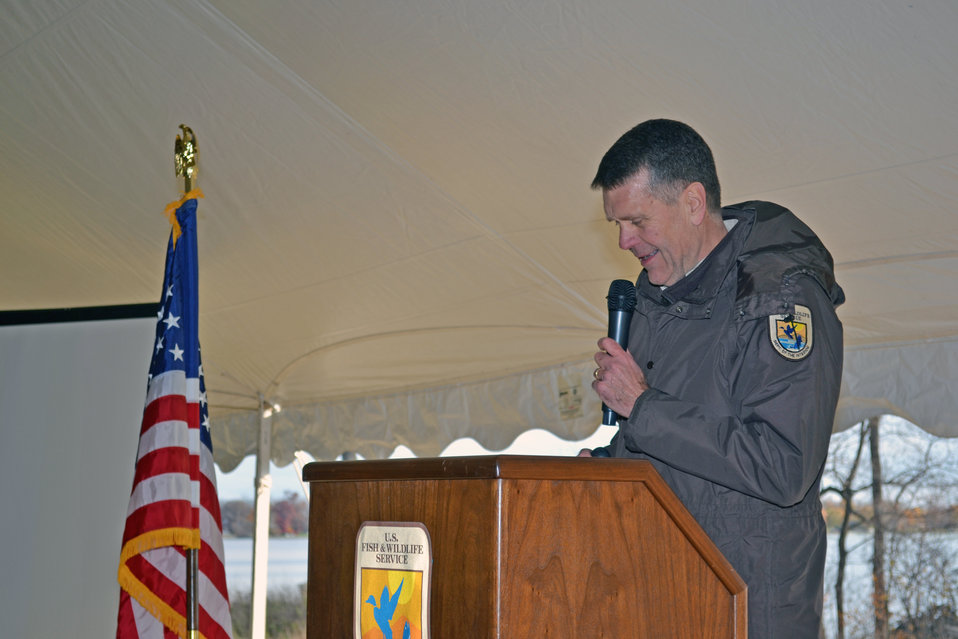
JohnHartig

Detroit River International Wildlife Refuge groundbreaking celebration.